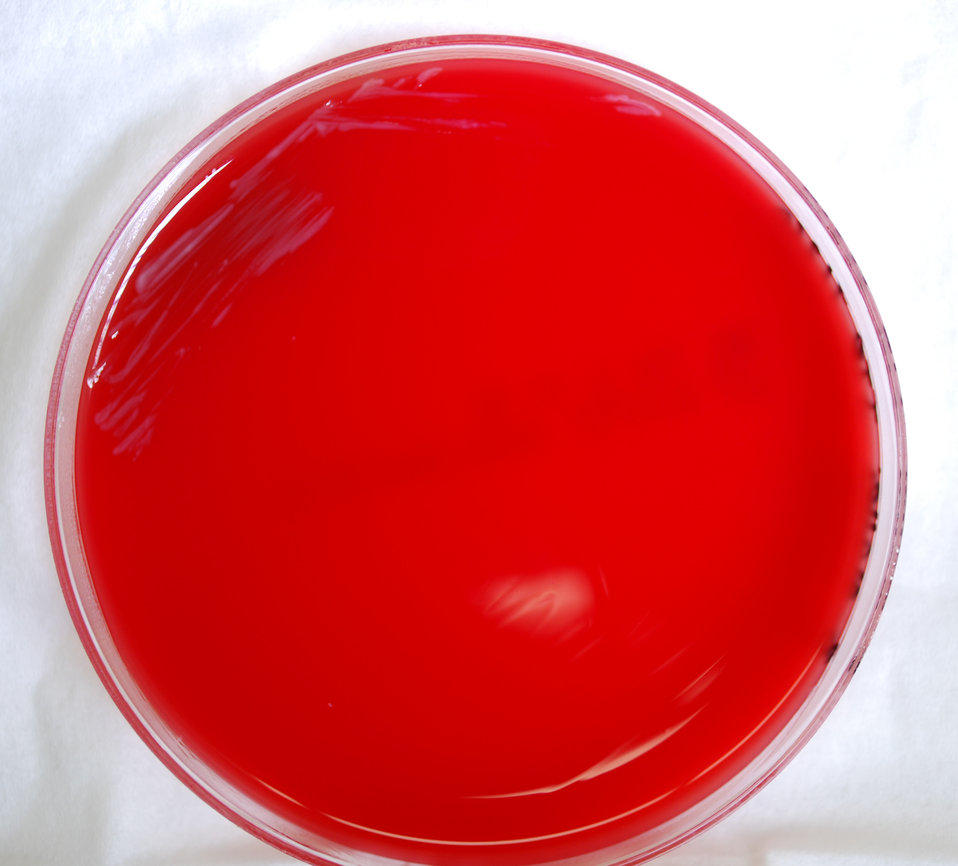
This photograph depicts the colonial morphology displayed by Gram-negative Burkholderia mallei bacteria, which was grown on a medium of sheep's blood agar (SBA), for a 24 hour time period, at a temperature of 37�C. See PHIL 12219 for closer view of these bacterial colonies.What is glanders?